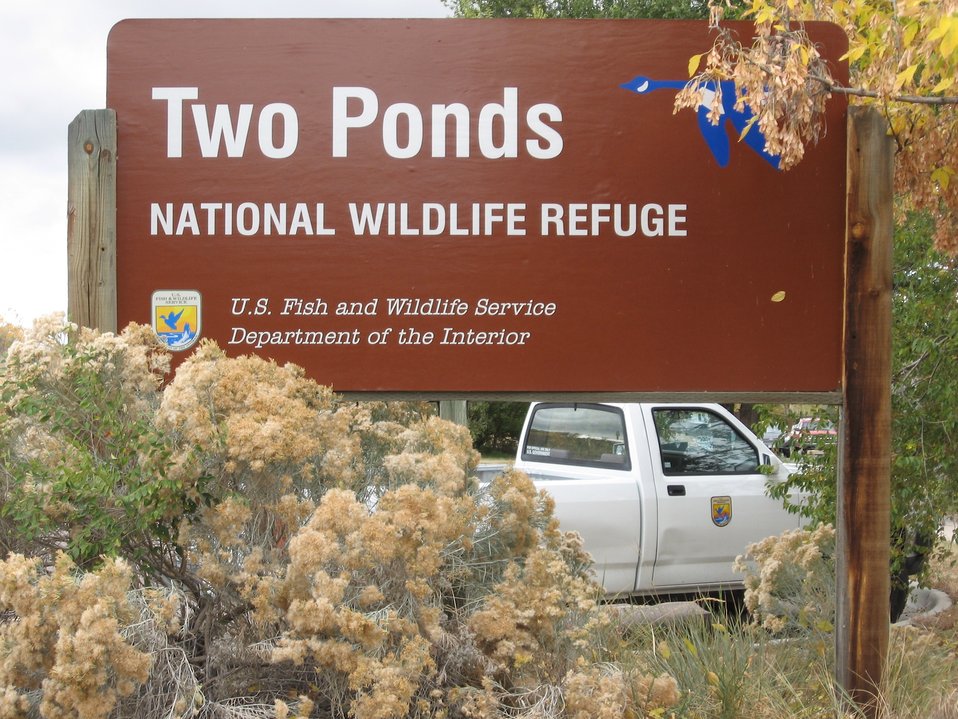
Two Ponds Sign and Truck